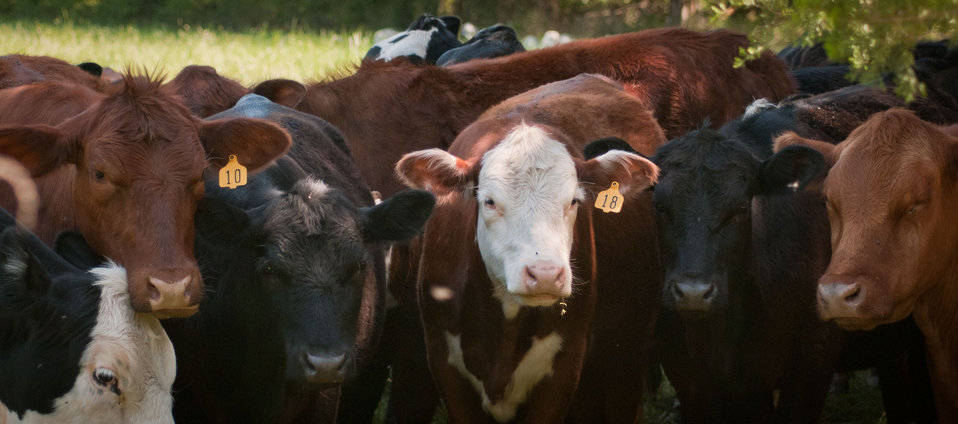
Cattle graze on grass at the Tuckahoe Plantation, in Goochland County, VA area on Thursday, May 5, 2011. An electrified fence keep herd in the proper pastures where they graze on the grass and leave nutrient rich manure to revitalize the soil, enhancing regrowth. The plantation was the boyhood home of President Thomas Jefferson from 1745 until 1752, today it is a working farm with cattle, sheep, chickens and rabbits supplying meats to Fall Line Farms a local food hub. Fall Line Farms offers a wide variety of household food staples and specialty items on an ever changing inventory of fruits, vegetables, meats, soaps, eggs, cheeses, flowers, honey, pastas, sauces, syrups, baked goods, mushrooms, flour and grains. Suppliers post what they have on a Lulus Local Food online listing and customers make their selection. Every Thursday, suppliers team up to deliver customized orders to, one of several pick-up points, designated by the customer in or around the Richmond, VA area.